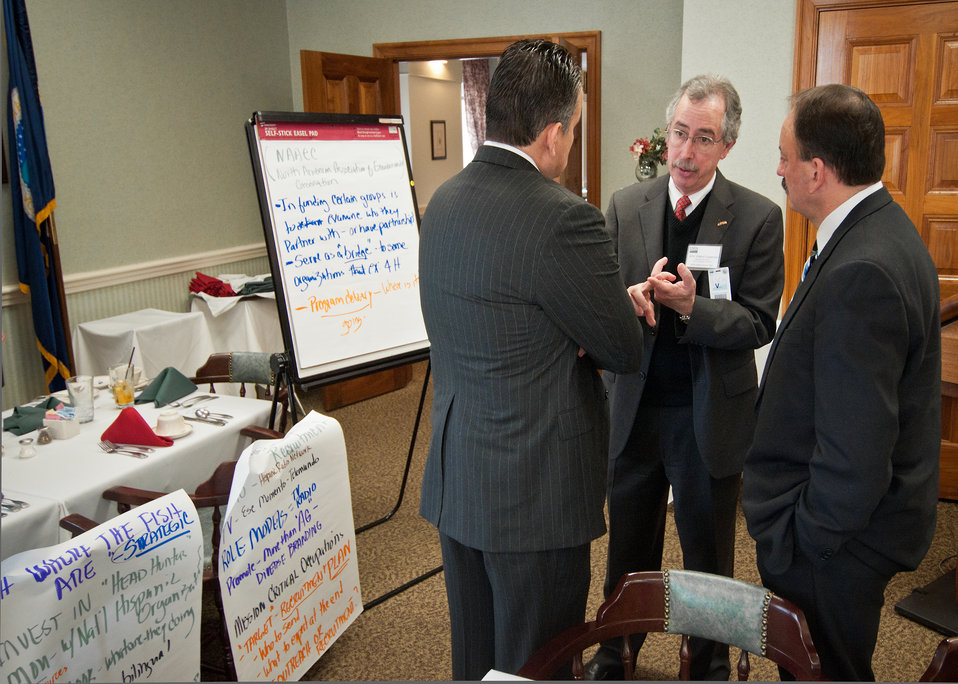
Oscar Gonzales, Jr. (left), Deputy Assistant Secretary for Administration, John Villamil-Casanova (center), Executive Vice President and Chief Information Officer ASPIRA, Inc. and Roger Rivera (right), President and Founder, National Hispanic Environmental Council discuss topics covered at the United States Department of Agriculture Hispanic Roundtable at the United States Department of Agriculture, Monday, December 5, 2011 in Washington, DC. The roundtable focused on recruitment, retention and employee development for the purpose of developing the USDA Hispanic recruitment Plan. The roundtable hosted several national Hispanic partners and recognized USDA Hispanic organizations and associations.